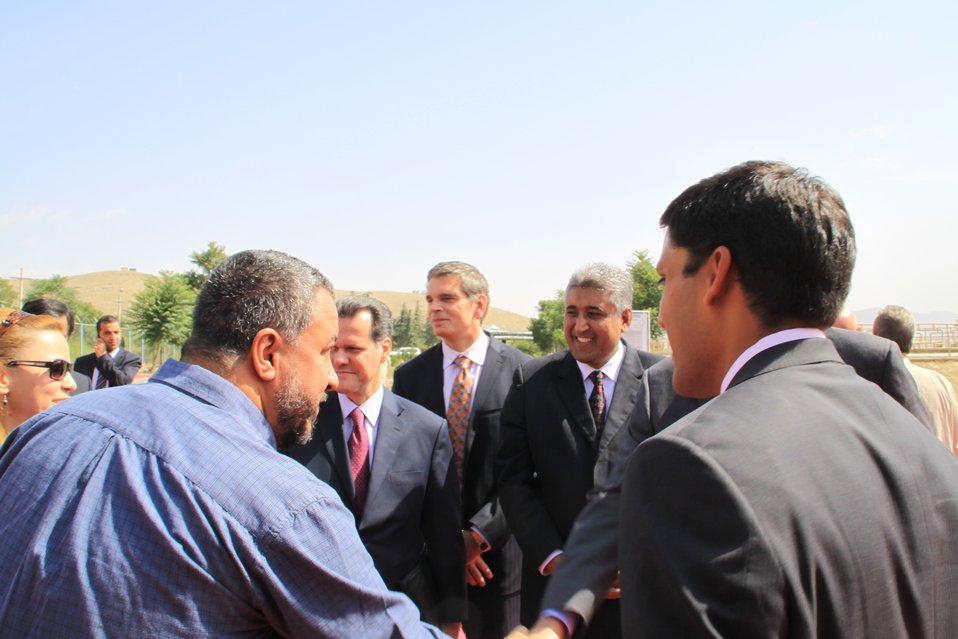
Badam Bagh Farm